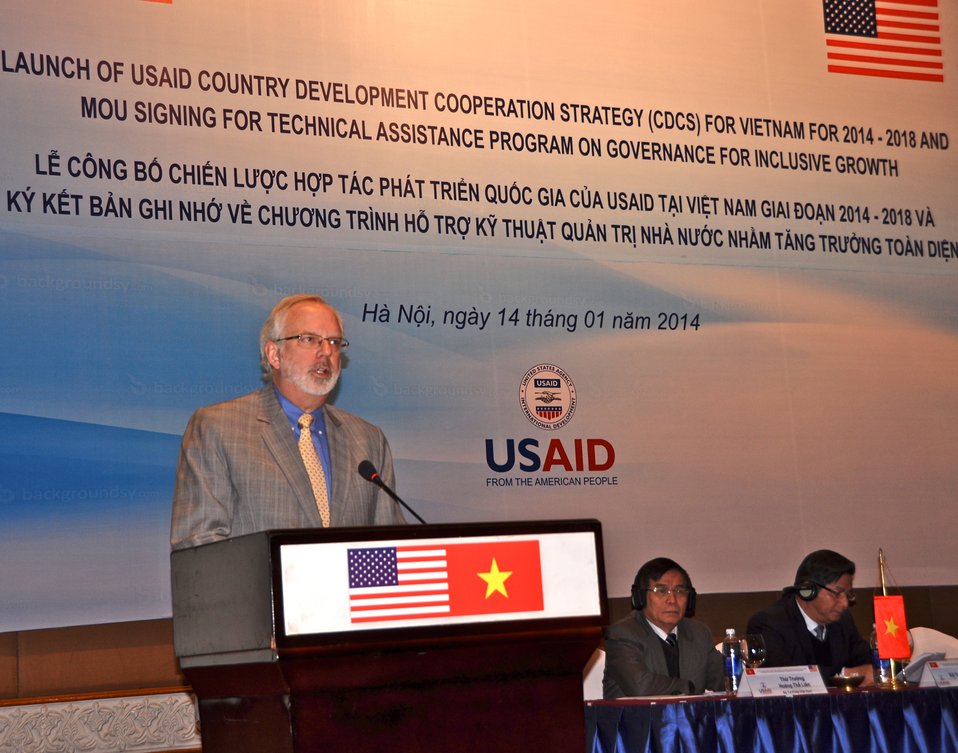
U.S. Ambassador David Shear speaks at the ceremony.